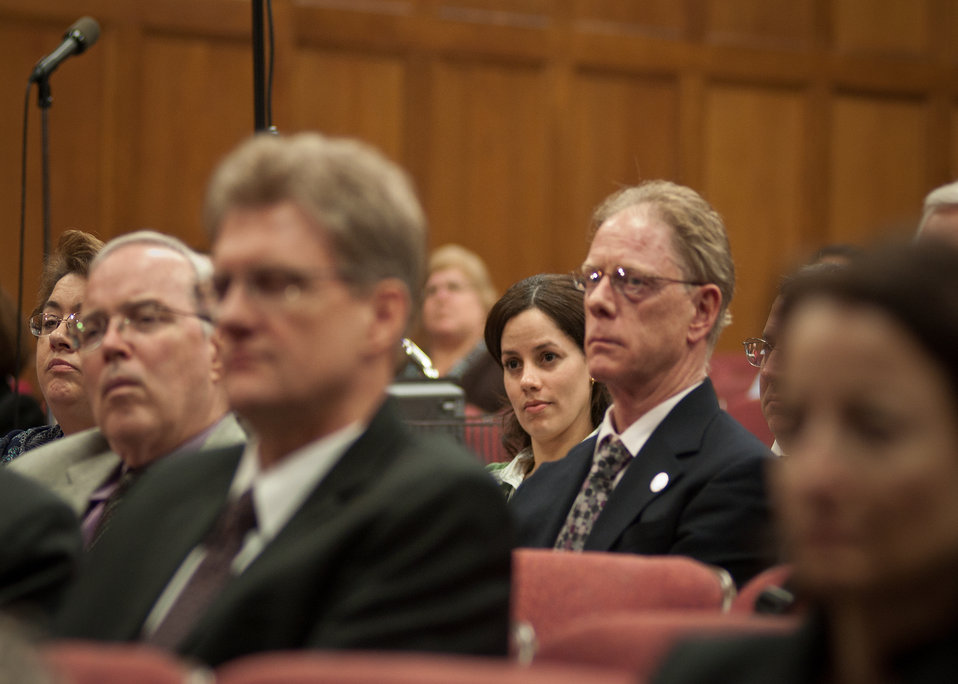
United States Department of Agriculture employees attending the Rural Development Celebration of Service held at USDA in Washington, DC, on Wednesday, November 16, 2011.